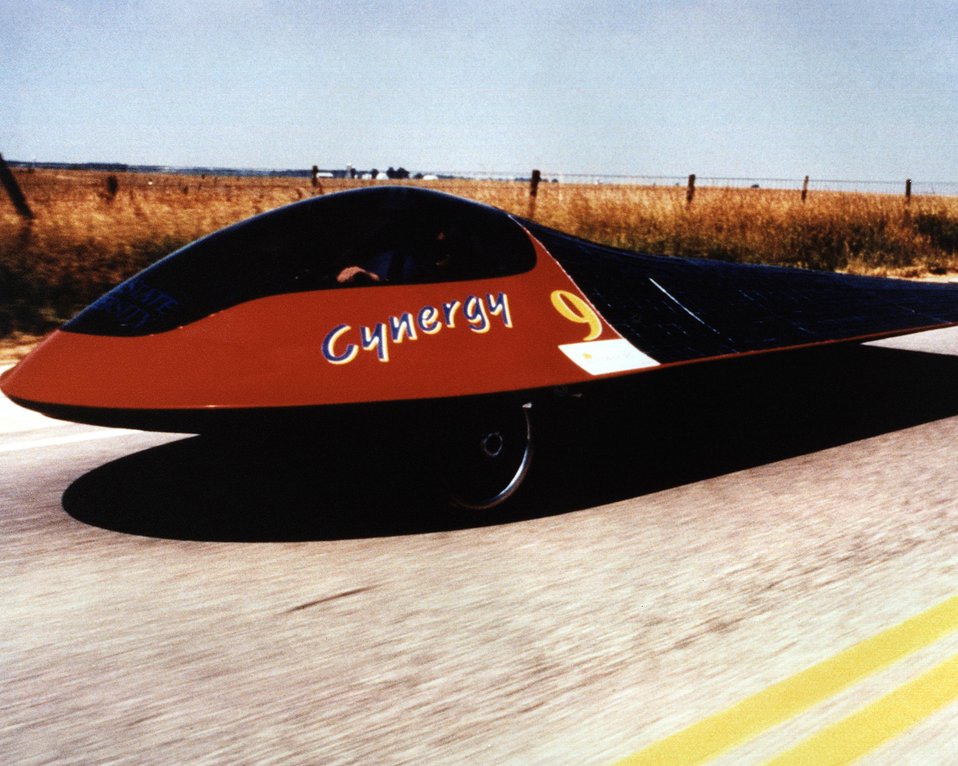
IOWA STATE UNIVERSITY'S 'PRISUM CYNERGY,' ON THE ROAD, PLACED 19TH. (JUNE 1995)